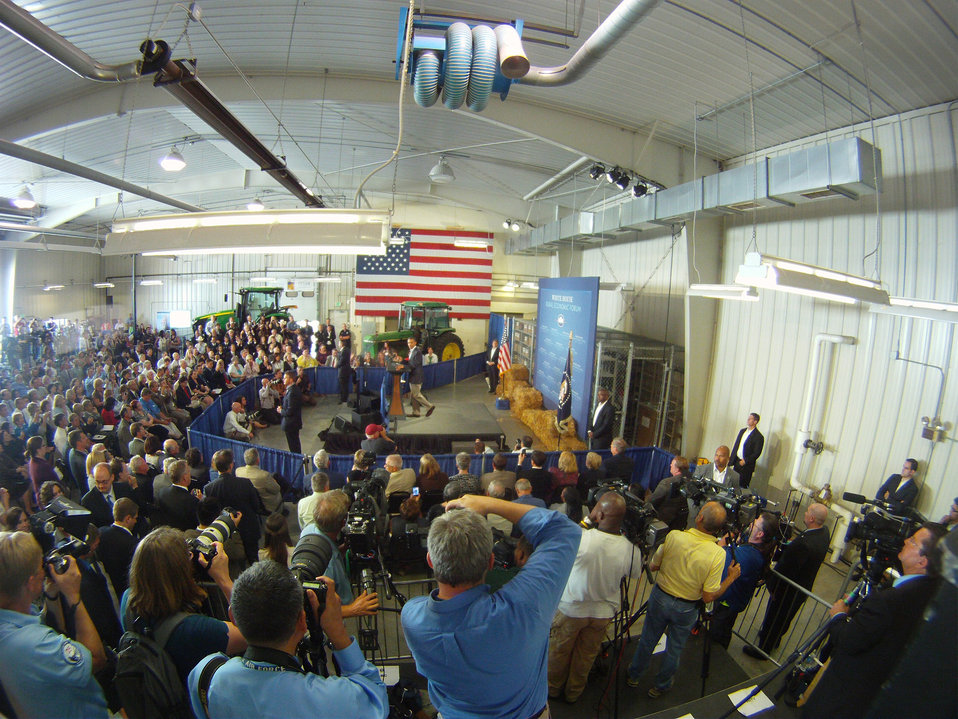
President Barack Obama speaking at the Northeast Iowa Community College, for a White House Rural Economic Forum on Tuesday, Aug. 16, 2011. The President’s visit will focus on agriculture’s contribution to the national economy, and how to create more jobs in rural America.